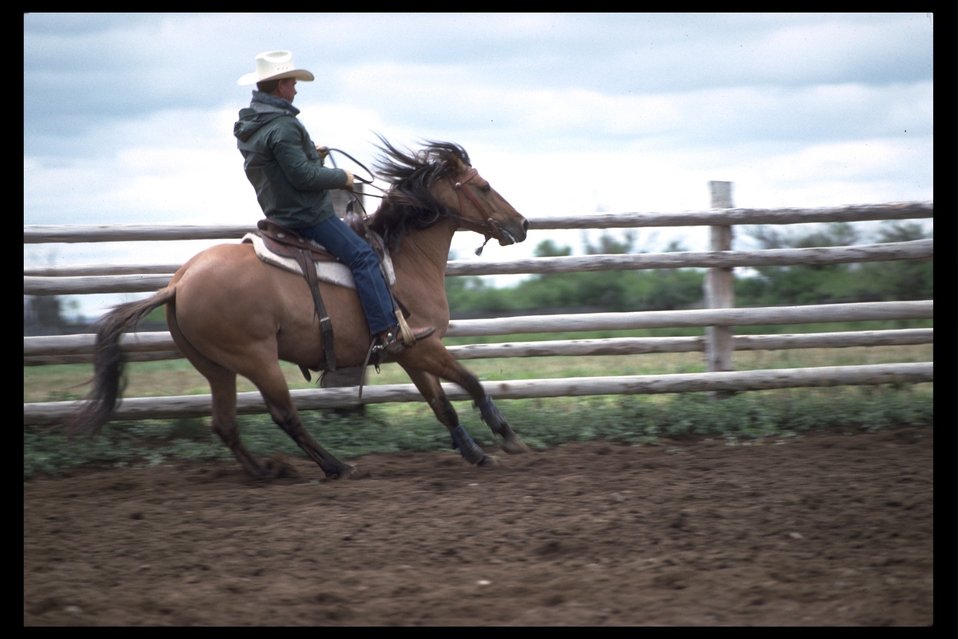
Bobby Ingersol on "Kiger Cougar", an adopted kiger mustang, at Bell A Ranch arena in Burns.